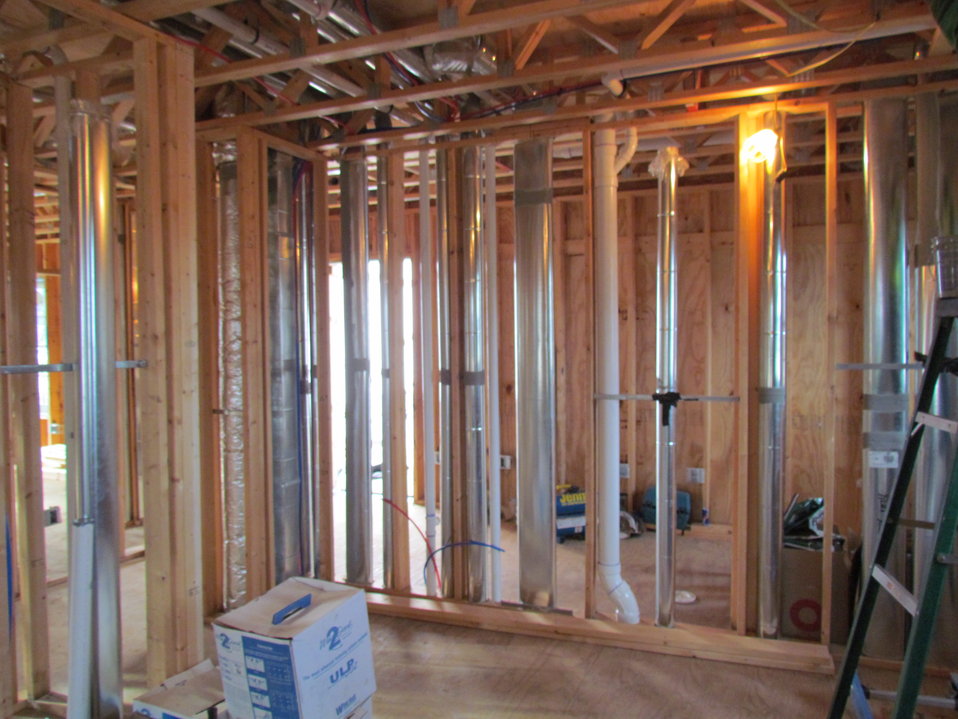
Net-Zero Energy Residential Test Facility – Construction photo showing duct work and plumbing on the first floor of facility. Photo taken in kitchen area of facility.